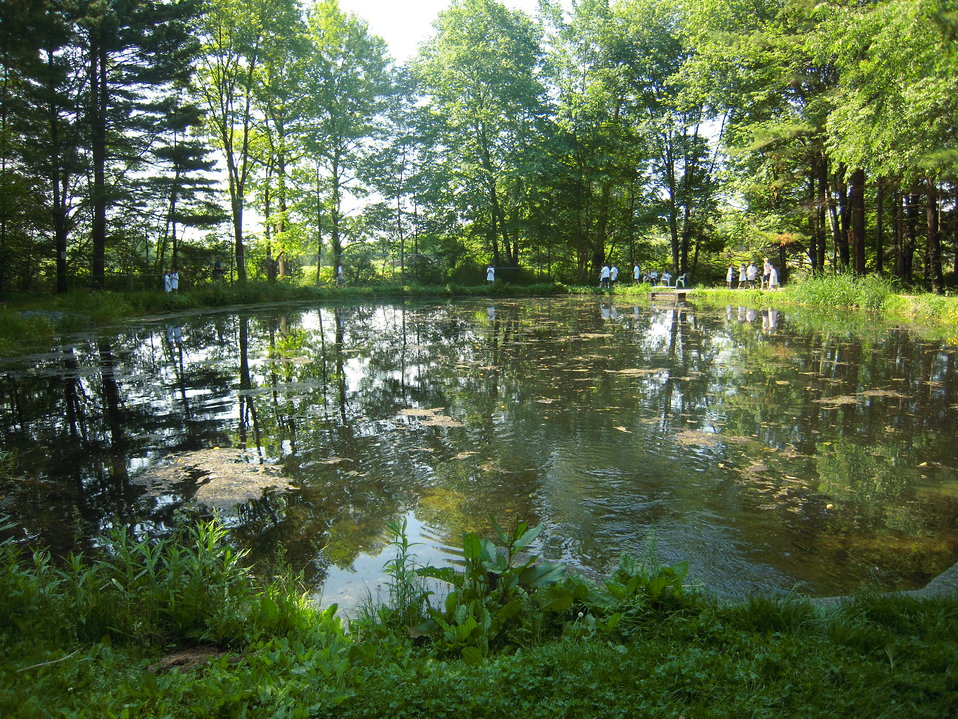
Hatchery pond